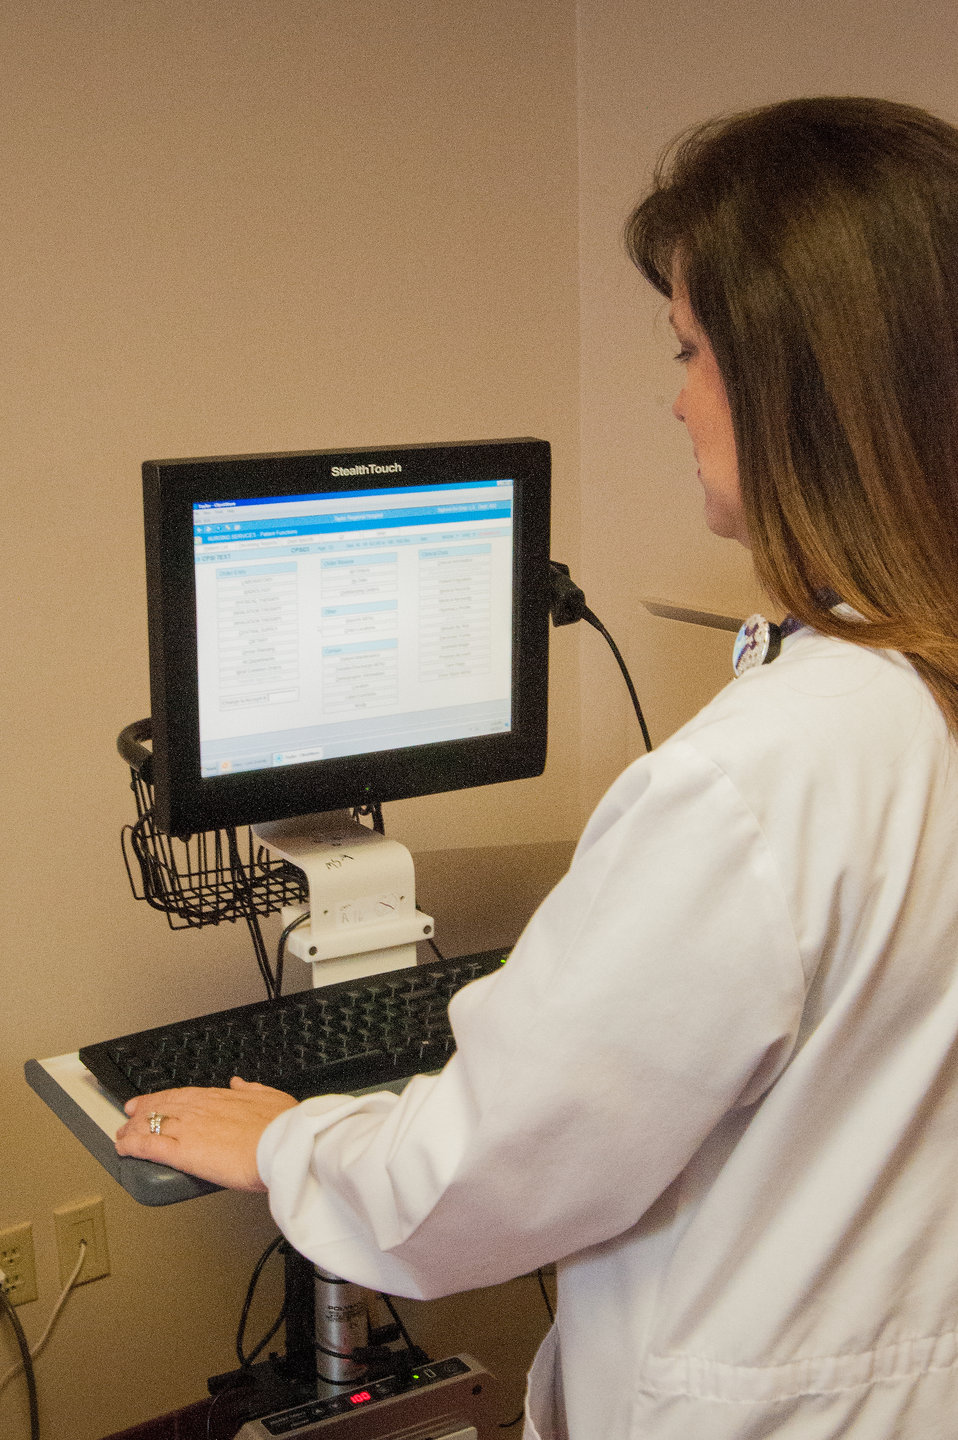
R.J. Taylor Memorial Hospital, Inc. Licensed Practical Nurse Dora Cater, LPN discusses a patients’ diagnosis and symptoms and records the information in the hospitals’ Electronic Medical Records System in Hawkinsville, GA on Mar. 6, 2013. The hospital is a licensed private, not-for-profit acute care facility providing emergency, specialty and primary health care in an area of rural Georgia that has a high percentage of people living below the state average poverty level and considered most economically distressed. The hospital has purchased an Electronic Medical Records System under an incentive program by the Federal government through the U.S. Department of Agriculture (USDA) Rural Development (RD) Community Facilities Loan (CF) that ensures fiscally responsive access to superior quality integrated health care.